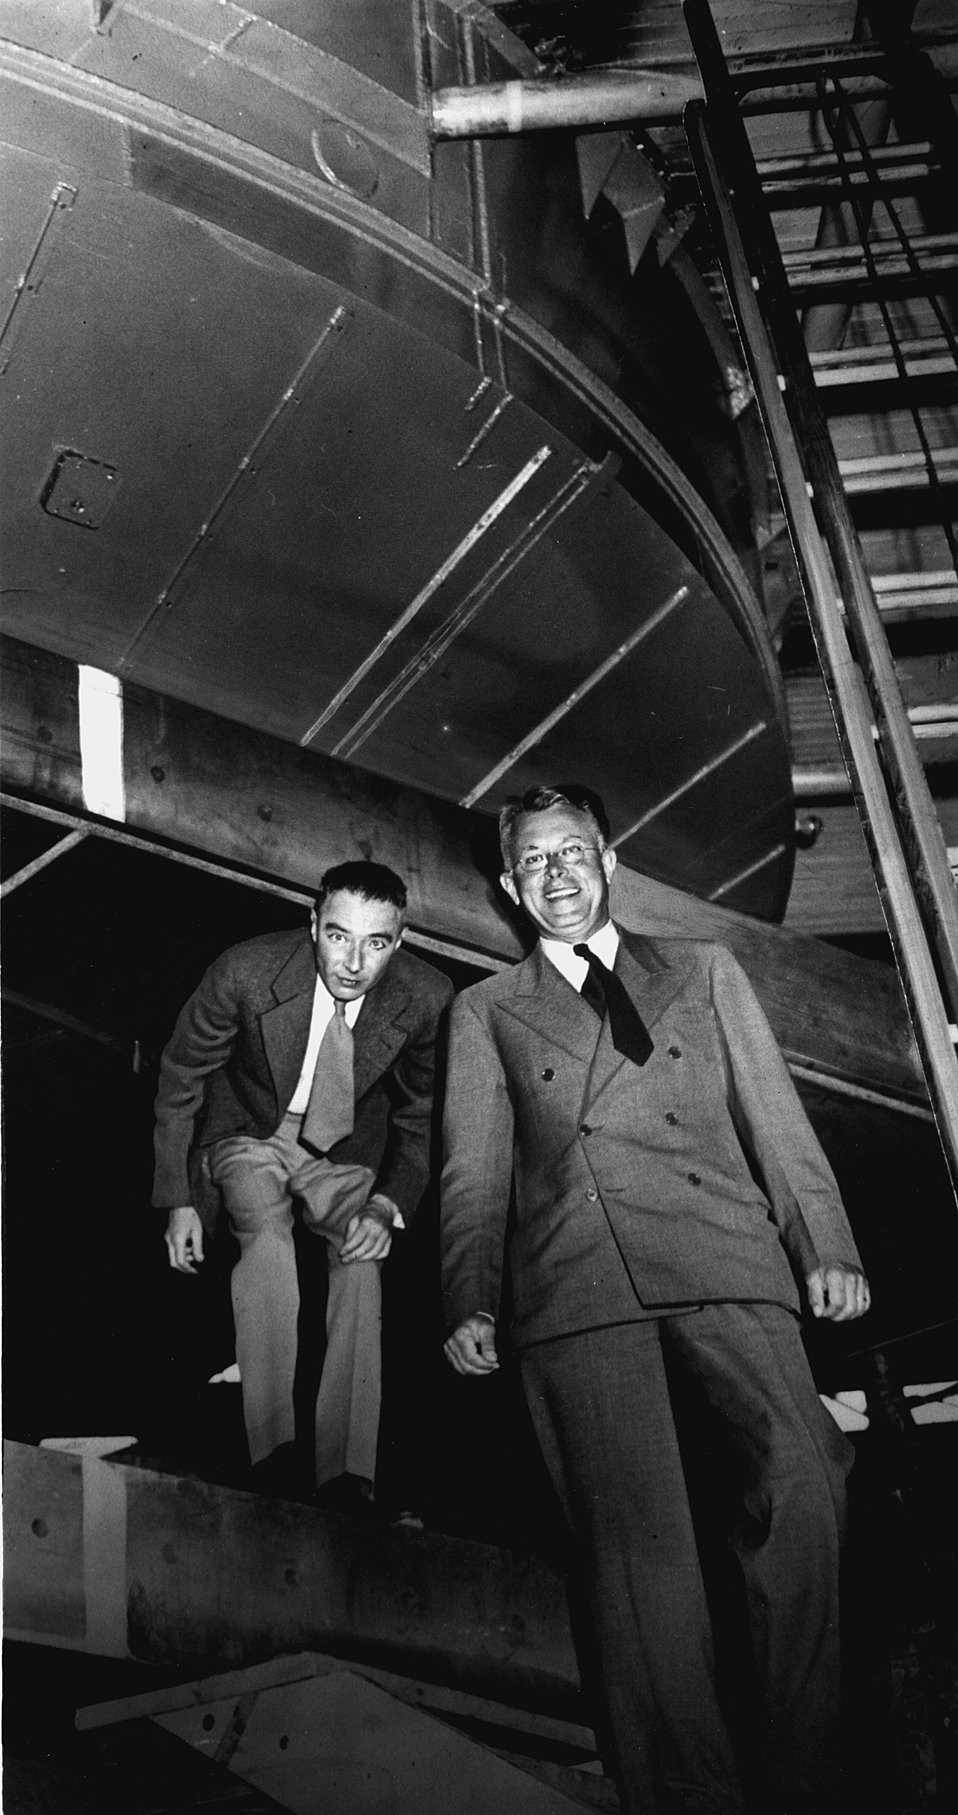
Oppenheimer and Lawrence at the 184-inch cyclotron, University of California (Berkeley) Radiation Laboratory. c. 1946